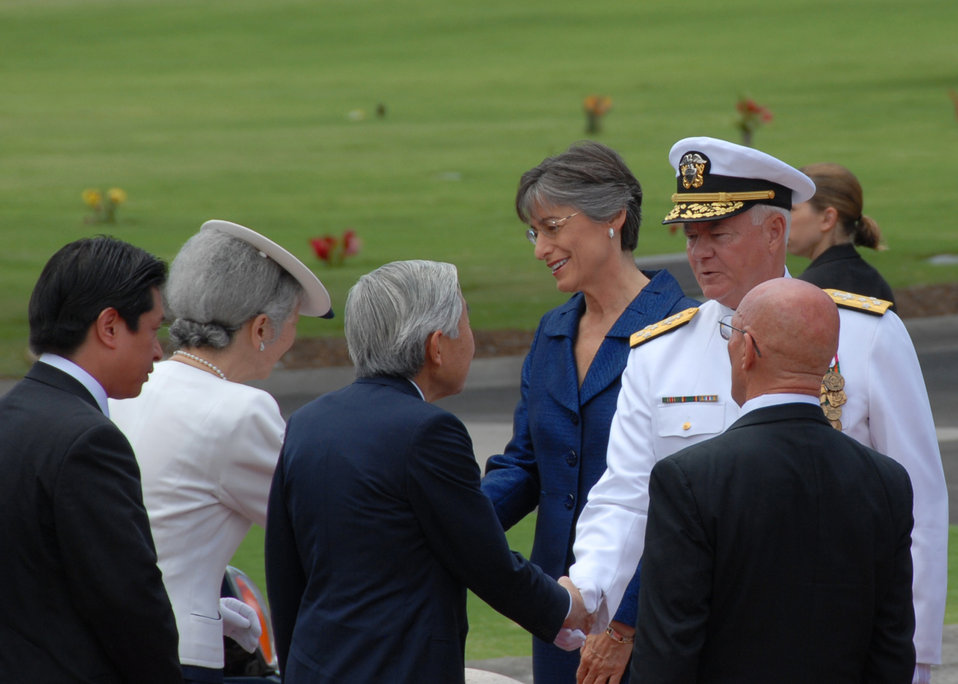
Japanese royalty honors America's fallen

Adm. Timothy Keating, U.S. Pacific Command commander, greets the Emperor of Japan at the National Memorial Cemetery of the Pacific July 15 at Punchbowl Crater, Hawaii. Emperor Akihito and Empress Michiko paid tribute to those interred at the cemetery by laying a chrysanthemum wreath. More than 50,000 service men and women are interred at the cemetery.